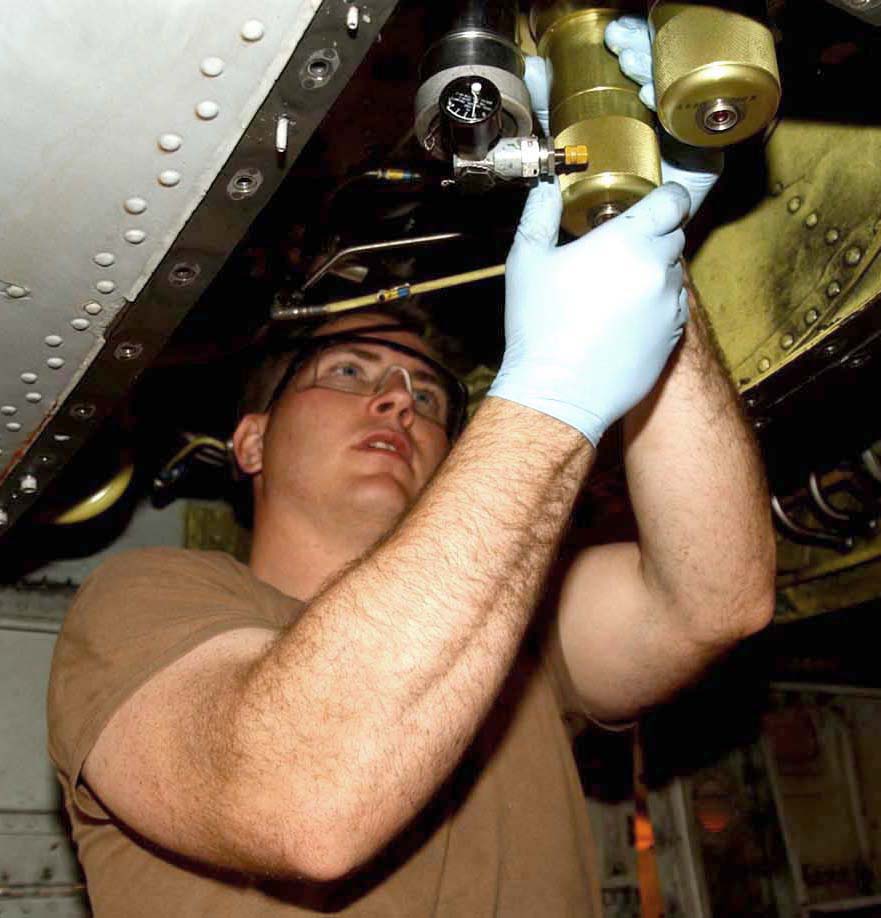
Phase maintenance

BAGRAM AIR BASE, Afghanistan -- Staff Sgt. Daniel May installs a hydraulic filter bowl to an A-10 Thunderbolt II. He is a phase inspection craftsman with the 455th Expeditionary Aircraft Maintenance Squadron.